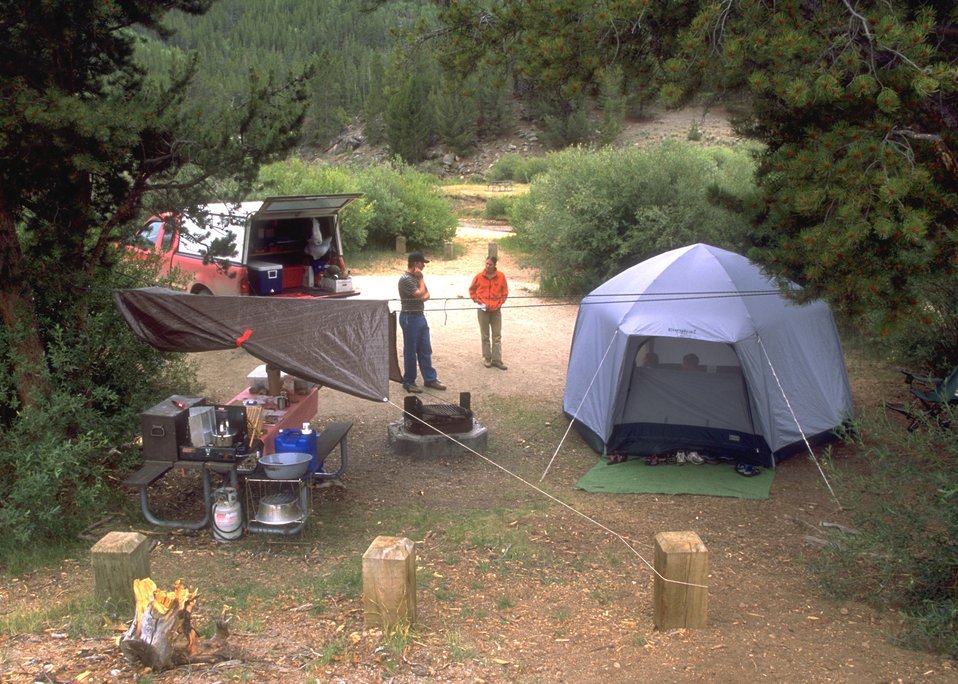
Sweetwater Bridge Campground, Rock Springs Field Office.